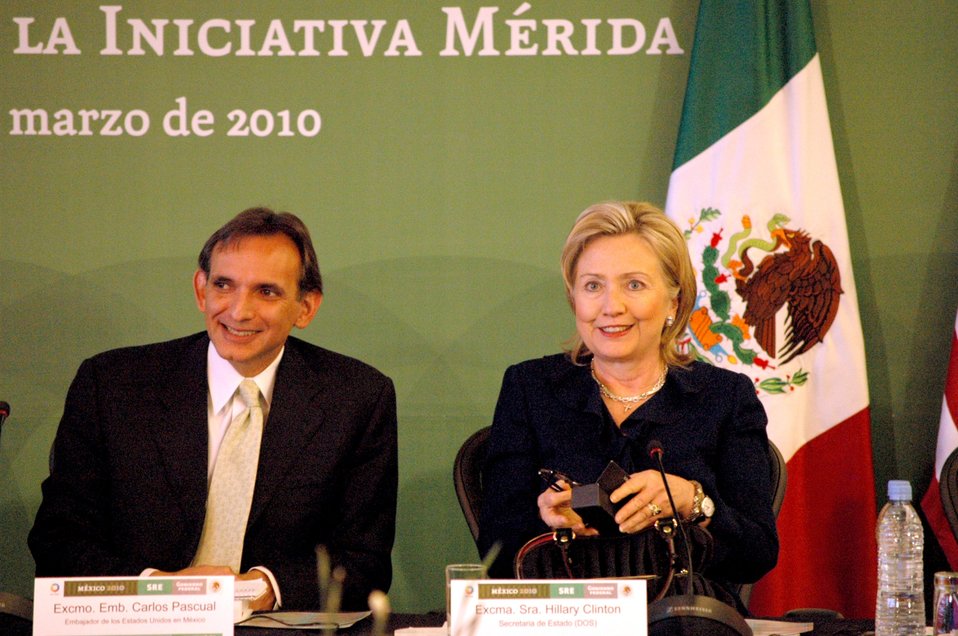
Secretary Clinton With U.S. Ambassador to Mexico Carlos Pascual

U.S. Secretary of State Hillary Rodham Clinton and U.S. Ambassador to Mexico Carlos Pascual speak during the Second Merida Initiative High Level Working Group Meeting, Mexican Secretariat of Foreign Affairs, Mexico City, March 25, 2010.